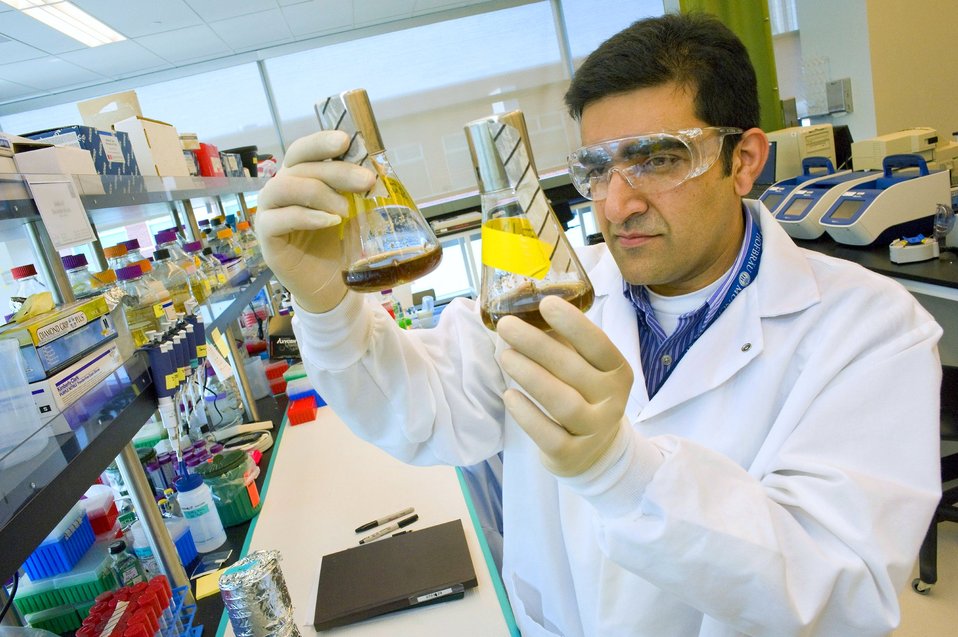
The Joint Bioenergy Institute at Lawrence Berkeley National Laboratory has identified a potential new advanced biofuel that could replace today's standard fuel if successfully commercialized.